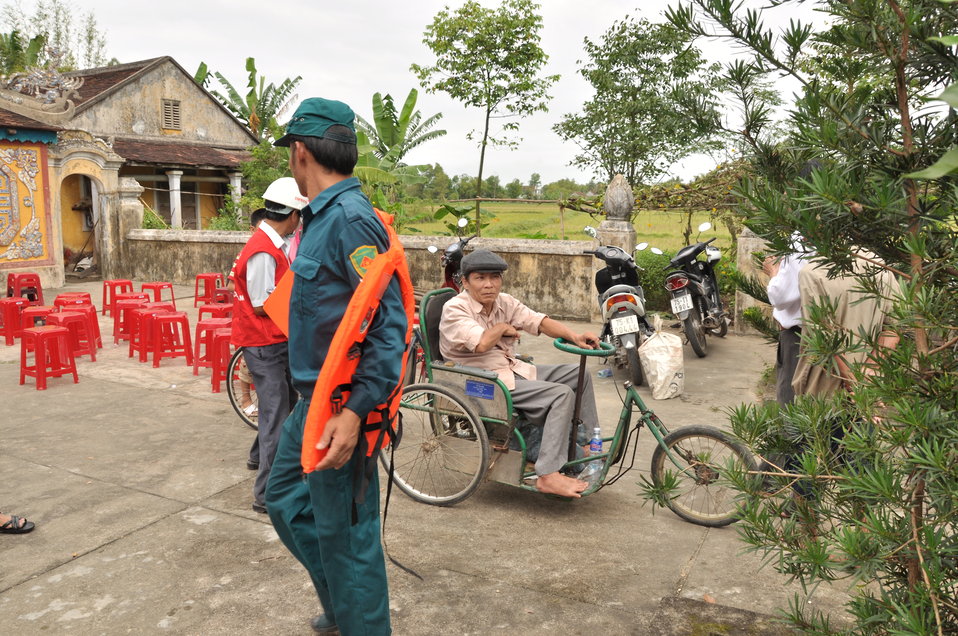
USAID and Save the Children support community evacuation drill and emergency preparedness in central Vietnam

Loc An Commune, Phu Loc District, Thua Thien Hue Province
December 4, 2012, Photo: Richard Nyberg, @USAIDVietnam